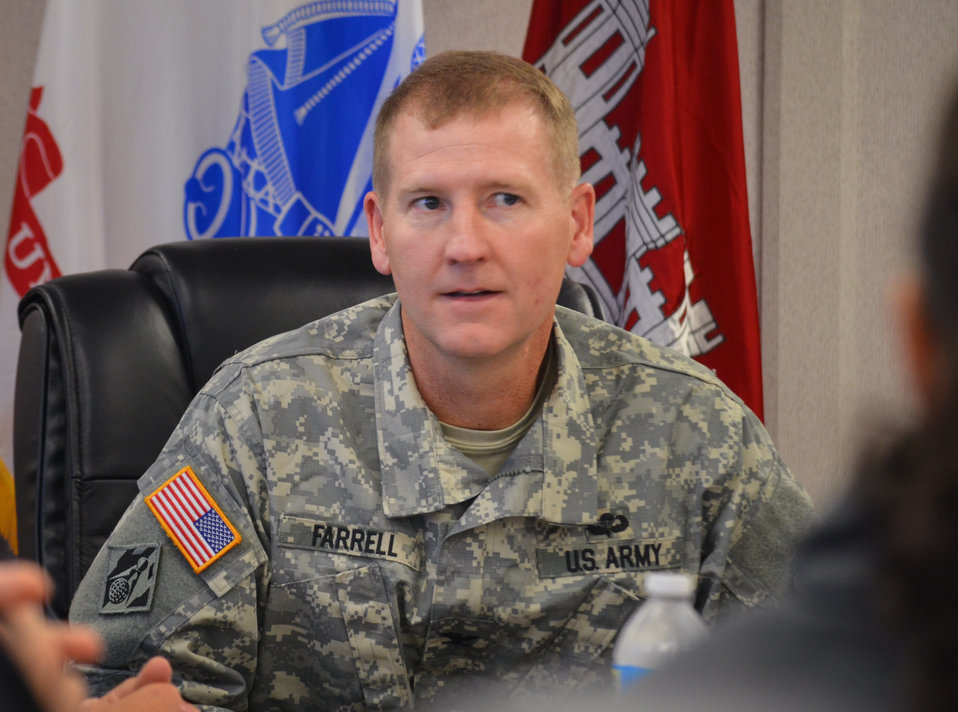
Col. Michael Farrell is the incoming commander for the U.S. Army Corps of Engineers Sacramento District

Col. Michael Farrell, incoming commander for the U.S. Army Corps of Engineers Sacramento District, receives a briefing on Folsom Dam’s new auxiliary spillway in Folsom, Calif., just prior to touring the construction site June 17, 2013. Farrell is set to assume command of the district from Col. Bill Leady during a change of command ceremony July 10. Photo cropped for emphasis.